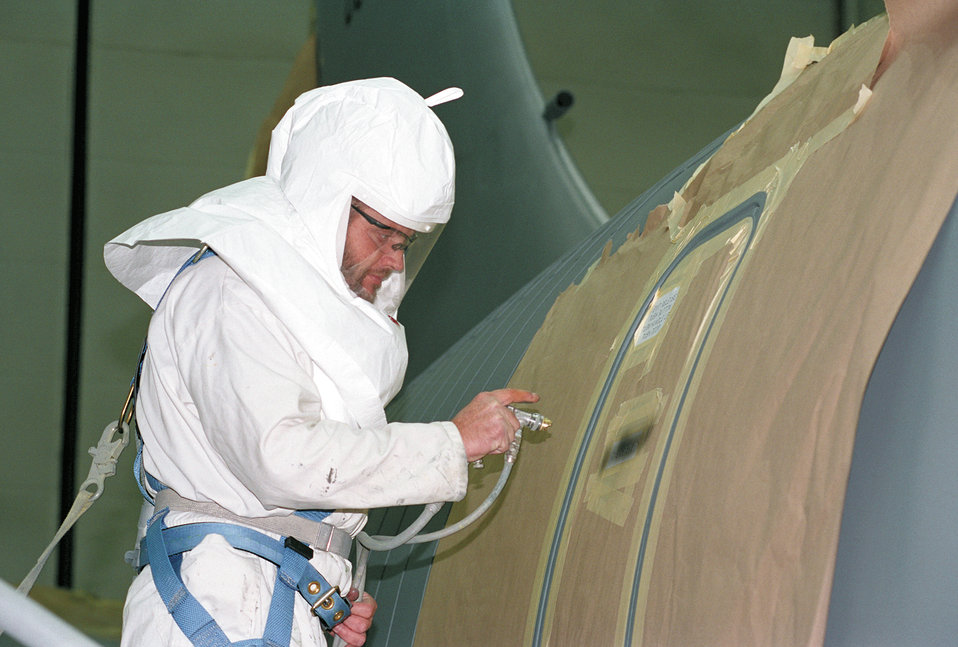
Painters produce picture-perfect planes

TINKER AIR FORCE BASE, Okla. -- Kenneth Kilgore paints stenciling on a KC-135 Stratotanker emergency exit door.